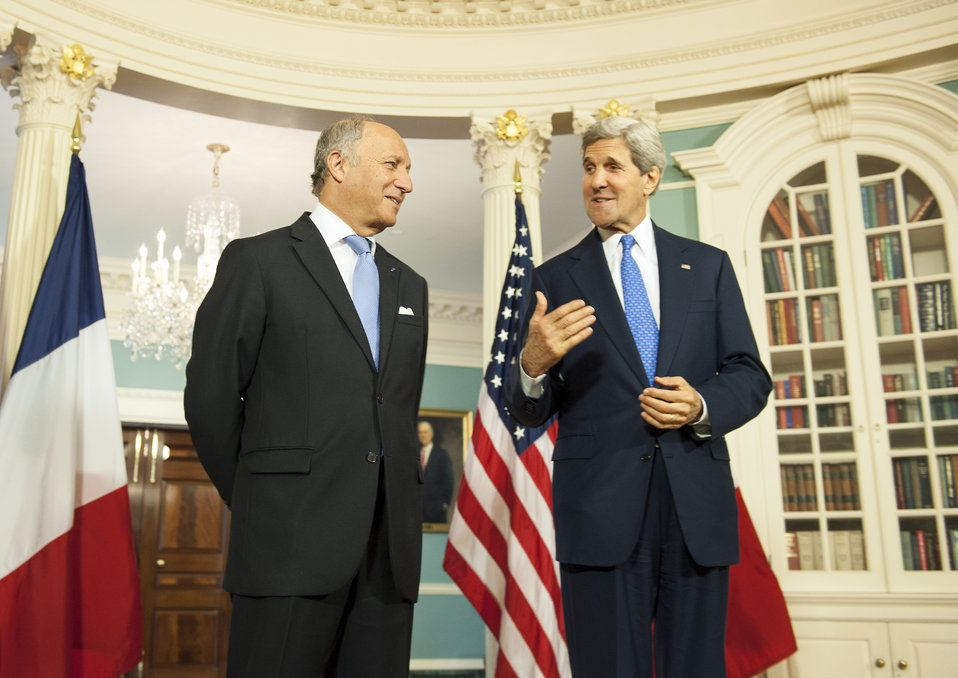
Secretary Kerry and French Foreign Minister Fabius Address Reporters

U.S. Secretary of State John Kerry and French Foreign Minister Laurent Fabius address reporters at the U.S. Department of State in Washington, D.C., on May 15, 2014.